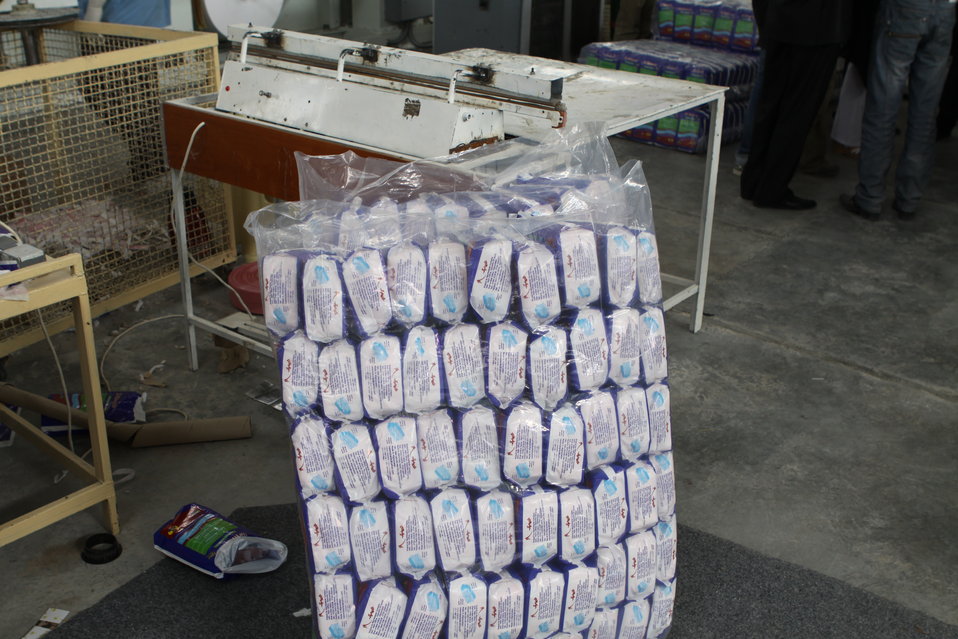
100525 Hirat Marble Conference 810